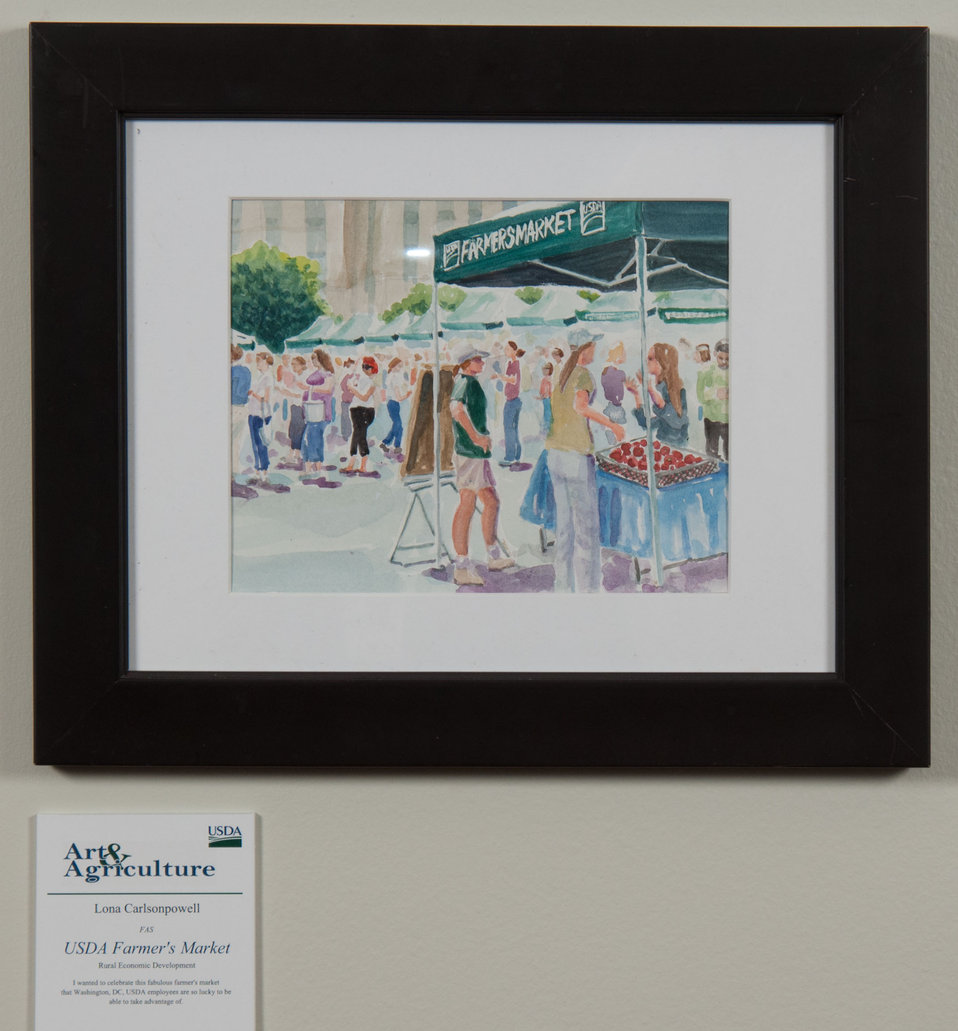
Online Viewer's Choice entries of the 2013 Art & Agriculture, Tuesday, July 9, 2013, in the South Building, Washington, D.C. Themes were expressed by employees from across the department and the contest was open to full-time and part-time USDA employees. Winning artwork will be displayed till the end of the year. U.S. Artistic expression is a creative outlet that is vital for an individual to grow and develop.